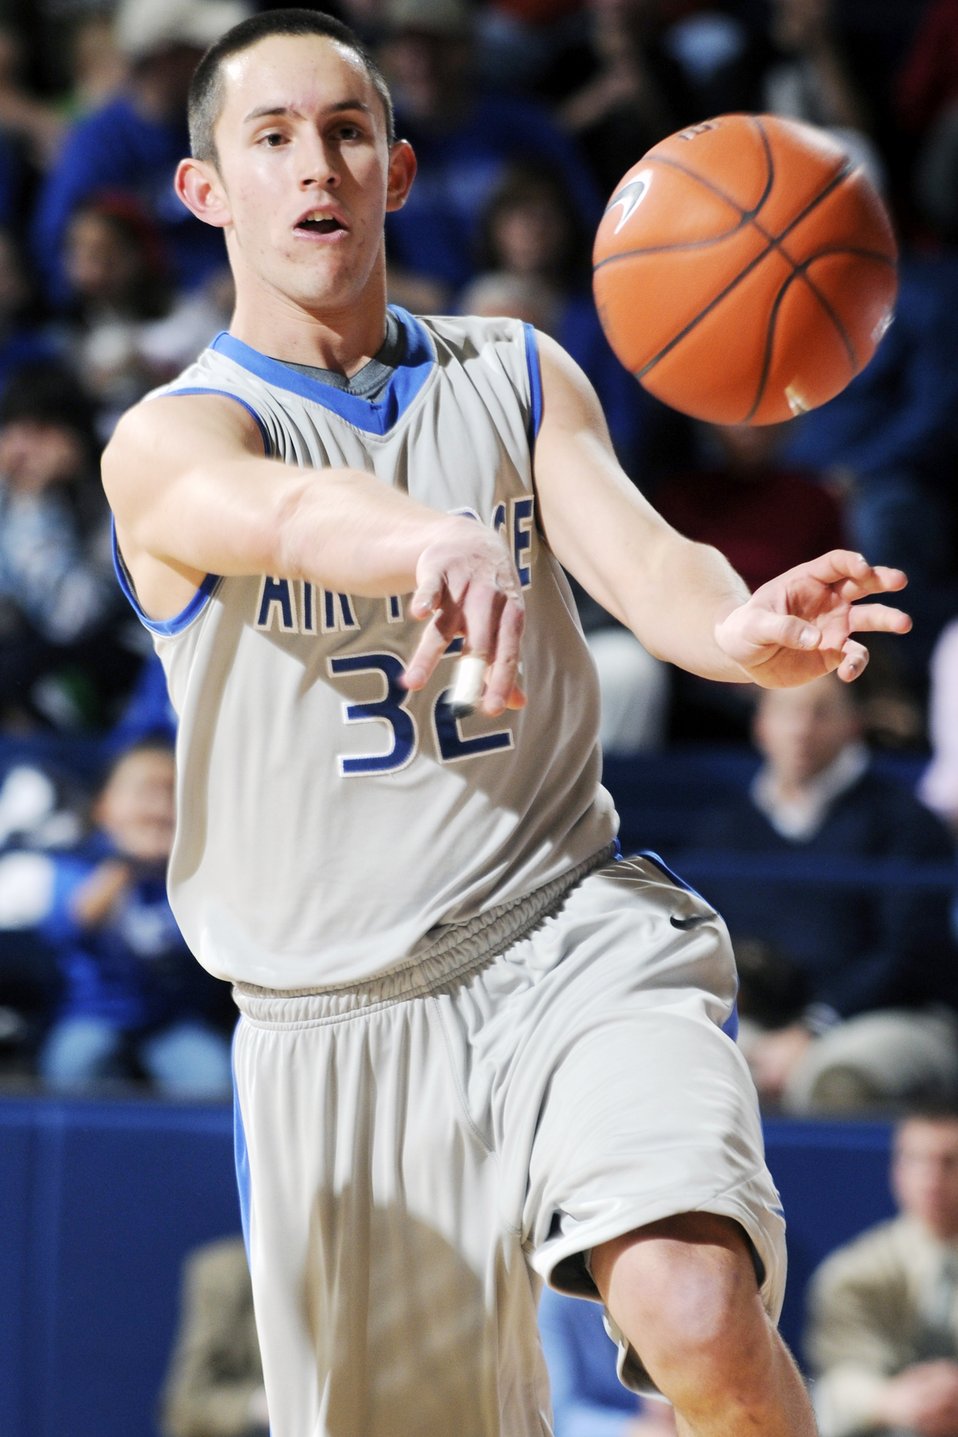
Falcons won 95-77

U.S. Air Force Academy, CO- Sophomore guard Shawn Hempsey passes the ball up the court against Dickinson State during the Reggie Minton Air Force Classic at Clune Arena Nov 20. The Falcons won 95-77, but finished the tournament in 2nd place after a 70-46 loss to Northern Colorado in the championship game.